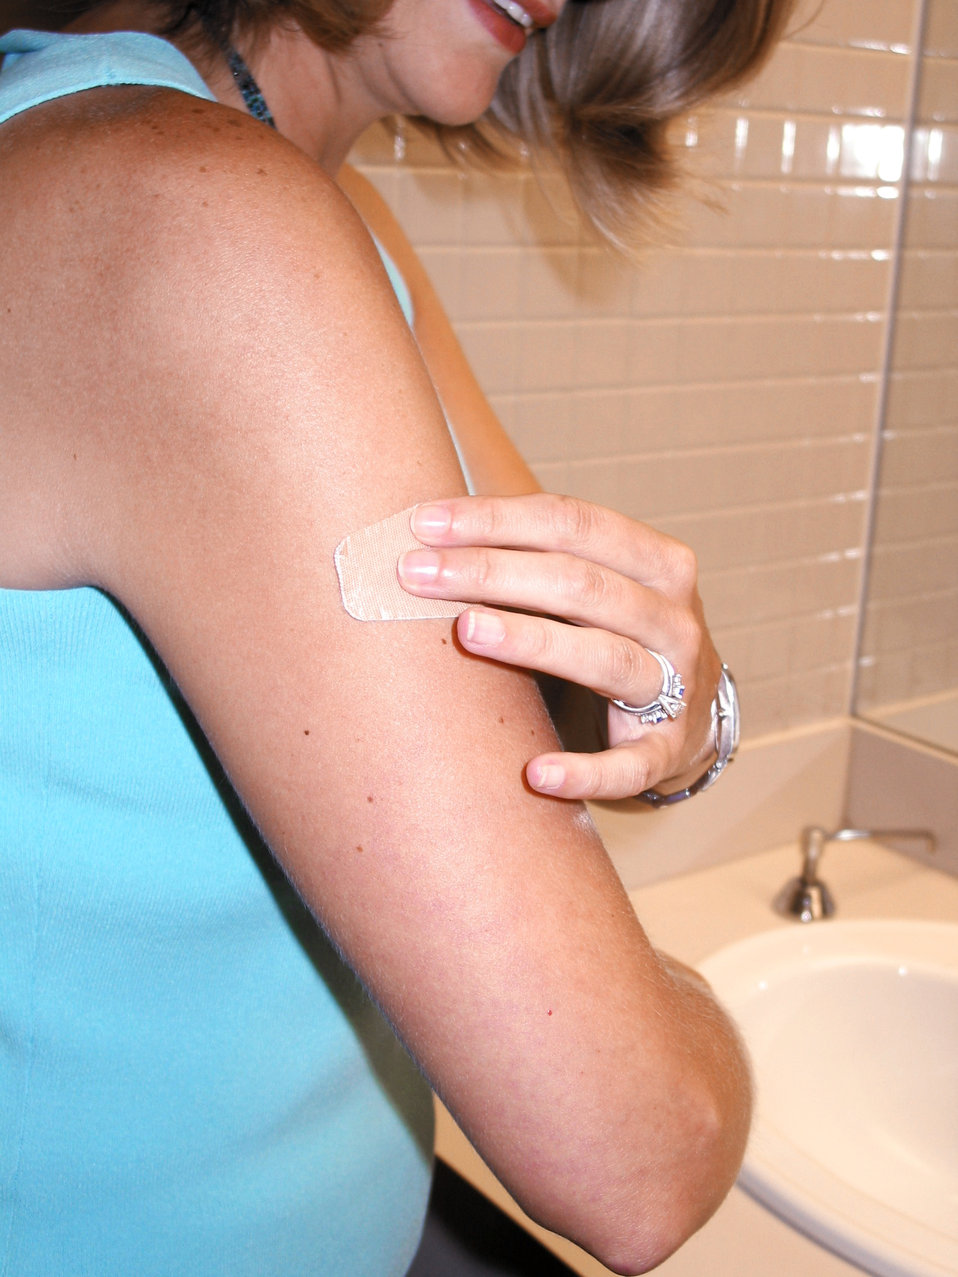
This was a demonstration of how a smallpox vaccinee should remove a waterproof bandage after taking a shower.